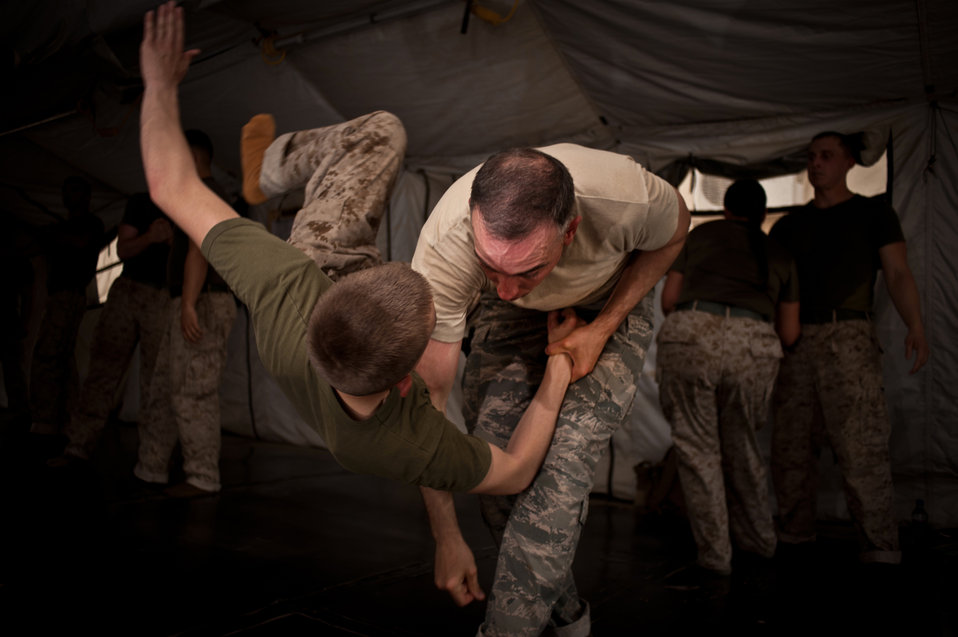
Take down

An Airman shoulder throws a Marine during Marine Corps Martial Arts training Aug. 30, 2011, at Camp Leatherneck, Afghanistan. By combining combat techniques with endurance training, the service members improve their physical fitness and gain more experience of the Marine Corps Martial Arts Program.